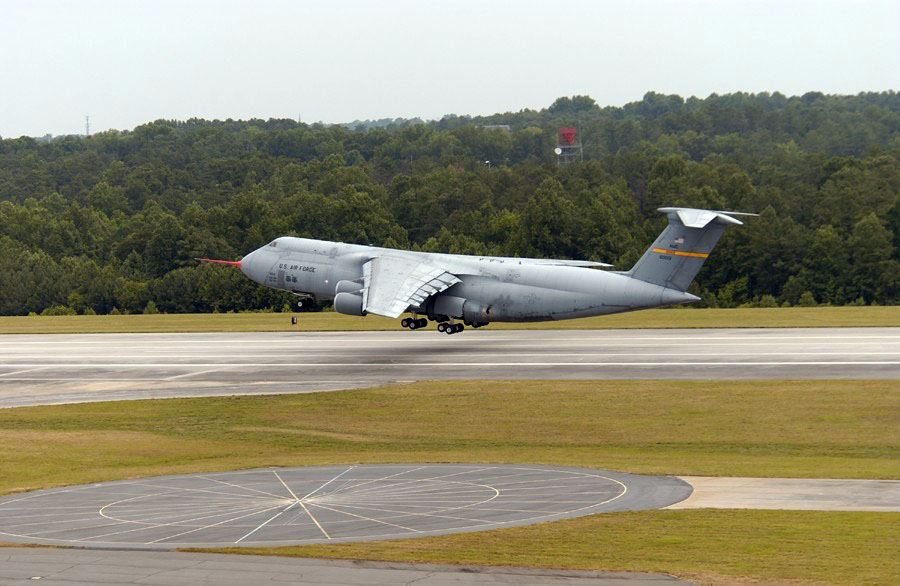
Dover C-5Ms complete test in surge operations

A C-5M Super Galaxy takes off during its First Flight ceremony at Lockheed Martin's Marietta, Ga., plant in June 2006.